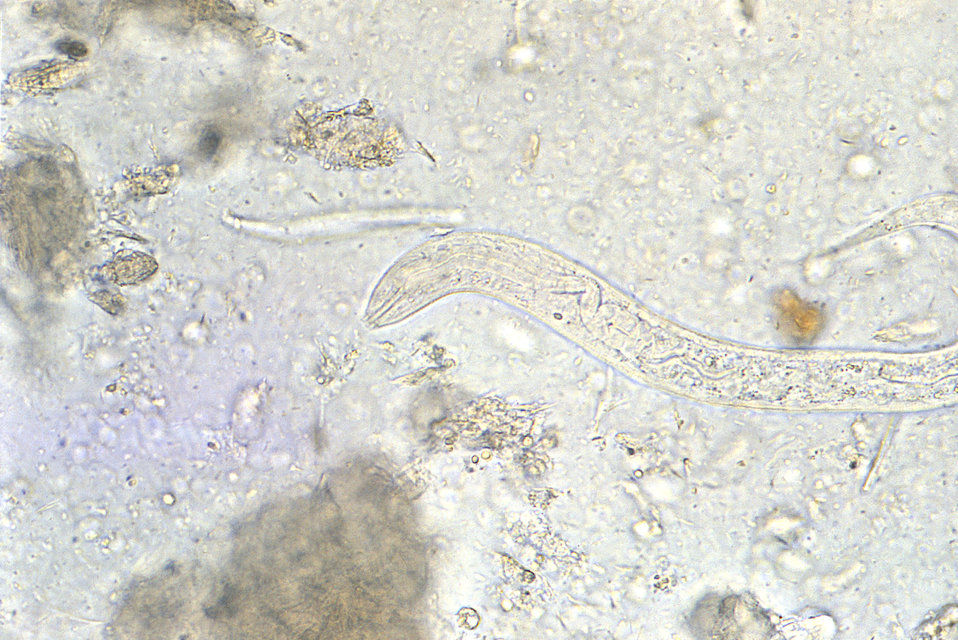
Under a relatively high magnification of 400X, this photomicrograph revealed some of the morphologic ultrastructure of a hookworm rhabditiform larva. Rhabditiform (L1) larvae that hatch from eggs are 250-300�m long, and approximately 15-20�m wide. They have a long buccal canal, as was evidenced in this specimen, and an inconspicuous genital primordium. Rhabditiform larvae are usually not found in stool, but may be found there is a delay in processing the stool specimen. If larvae are seen in stool, they must be differentiated from the L1 larvae of Stronyloides stercoralis.